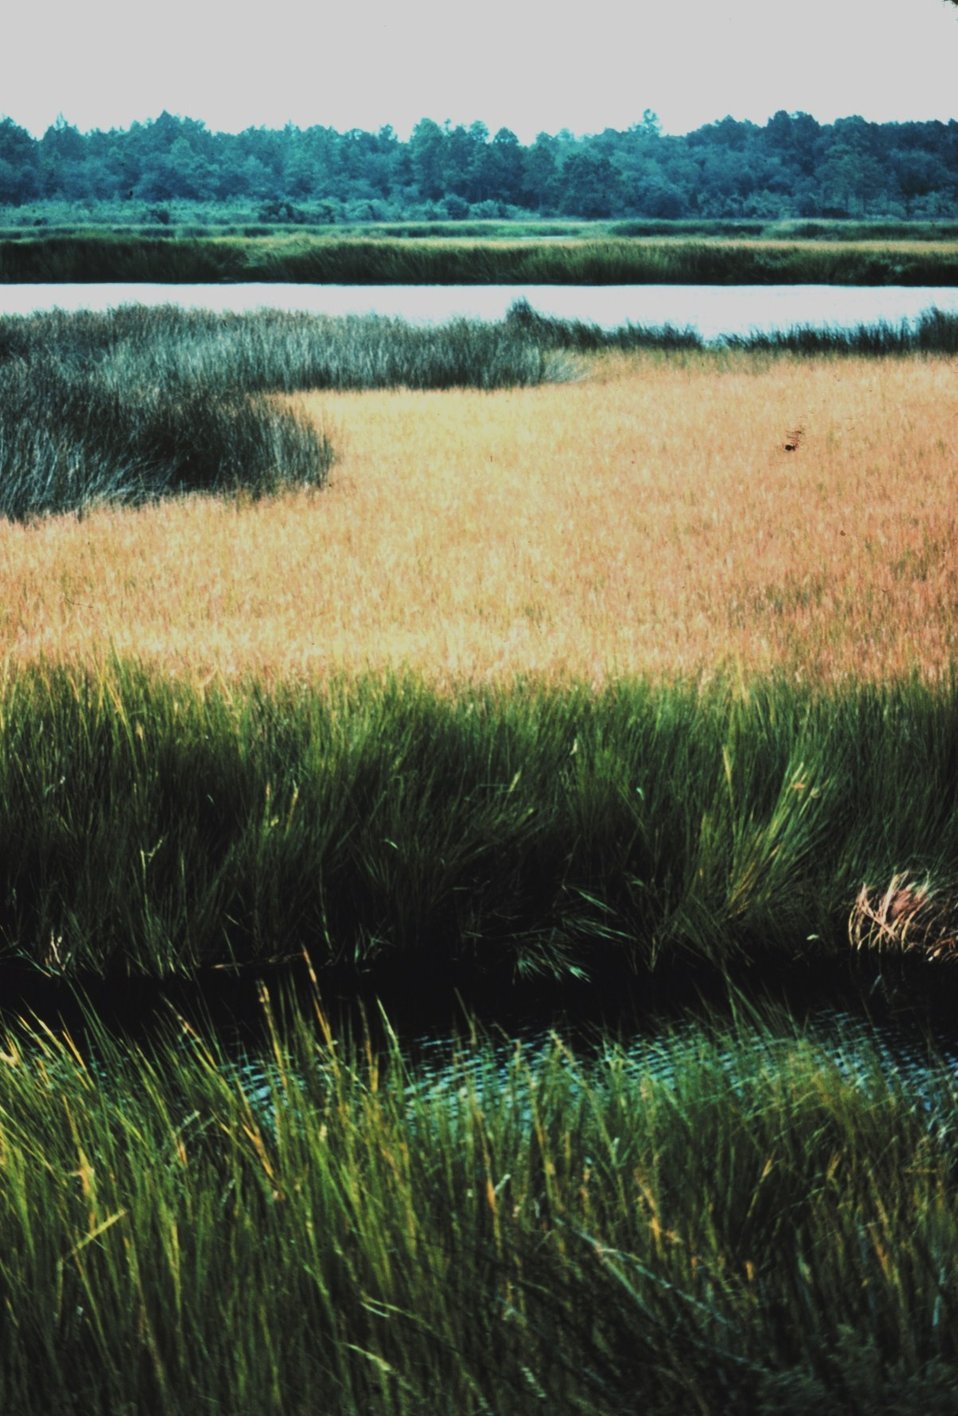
Black needle rush and Saltmarsh cordgrass (Spartina). Maritime forest is seen in the background.